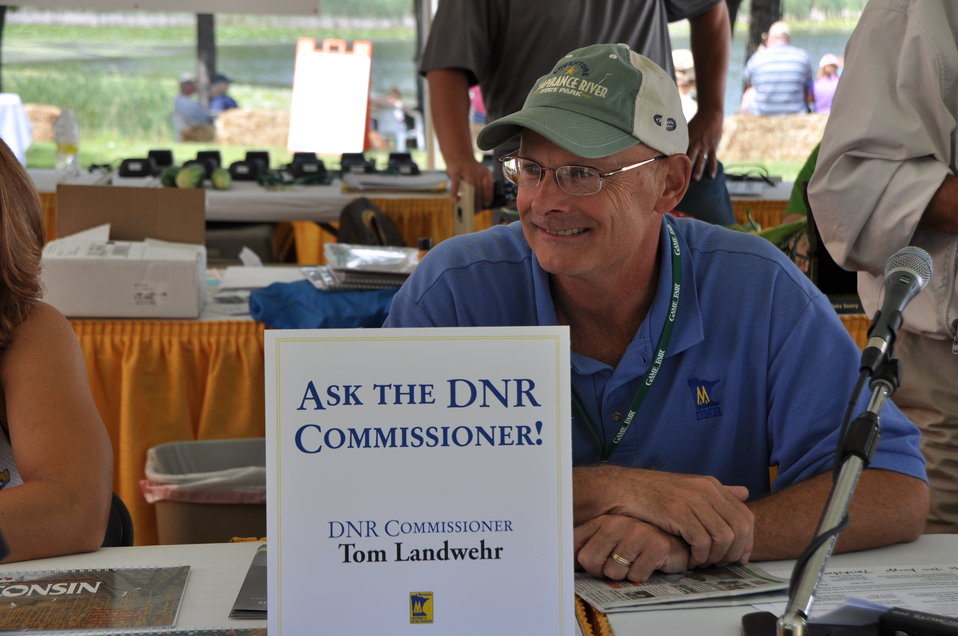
Minnesota DNR Commissioner Tom Landwehr at Game Fair.